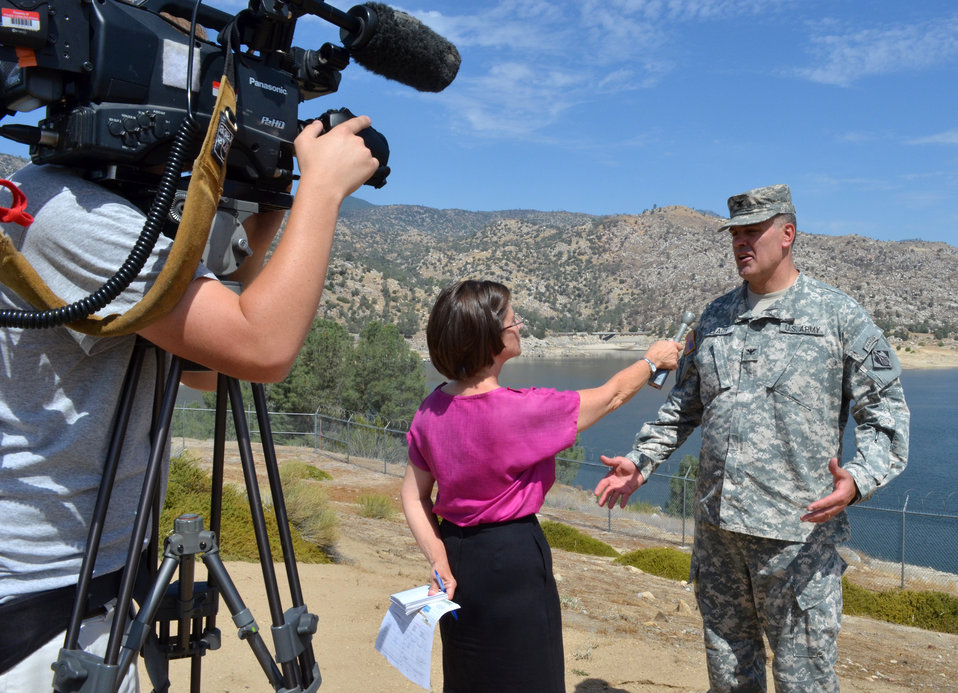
Congressman, Corps officials tour Isabella Lake

Col. Bill Leady, commander of the U.S. Army Corps of Engineers Sacramento District, speaks with Bakersfield and Kern River Valley media during a visit to Isabella Lake, Calif., Aug. 16, 2012. Leady discussed the Corps’ tentatively selected plan for modernizing the Isabella Lake Dams, including addressing current issues such as seepage and reducing the potential of dam overtopping.